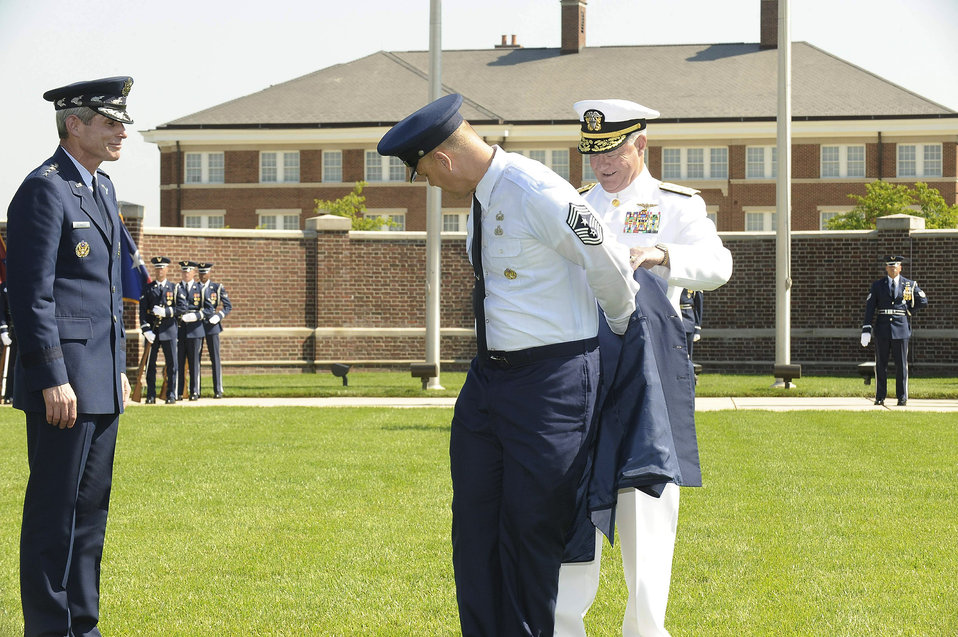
CMSAF discusses force priorities, continued support for families, wounded warriors

Admiral Timothy J. Keating, U.S. Pacific Command commander, removes Chief Master Sergeant of the Air Force James A. Roy's command chief master sergeant service jacket worn during his time as the U.S. Pacific Command senior enlisted leader and advisor. Chief Roy now would be donning the new chief master sergeant of the Air Force chevrons while Air Force Chief of Staff Gen. Norton Schwartz (left) looks on. Chief Roy became the 16th chief master sergeant of the Air Force during a ceremony June 30 at Bolling Air Force Base, D.C.